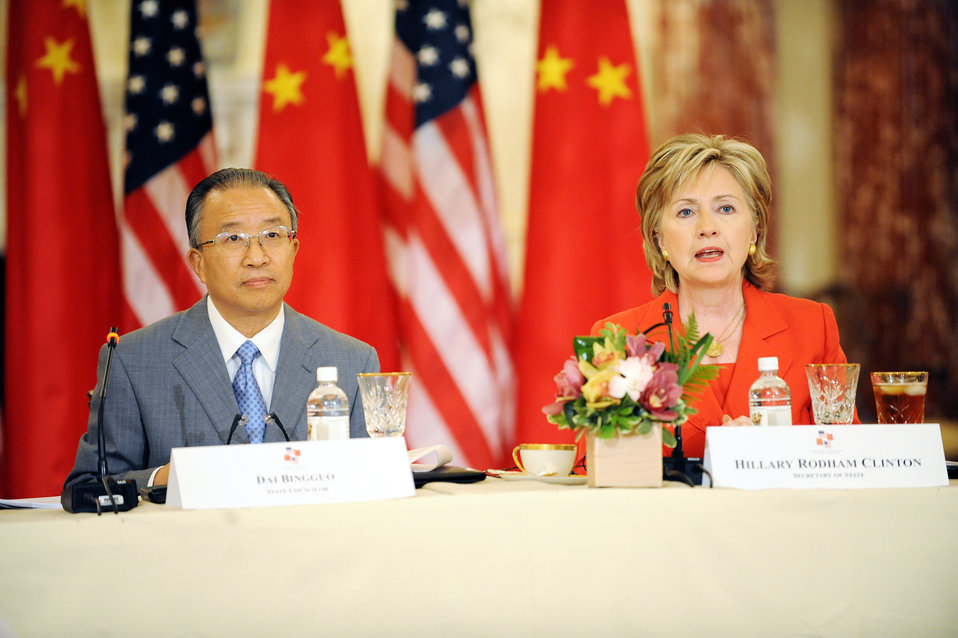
U.S.-China Strategic and Economic Dialogue

U.S. Secretary of State Hillary Rodham Clinton during a meeting with Chinese State Councilor Dai Bingguo in the Treaty Room of the U.S. Department of State July 28, 2009.